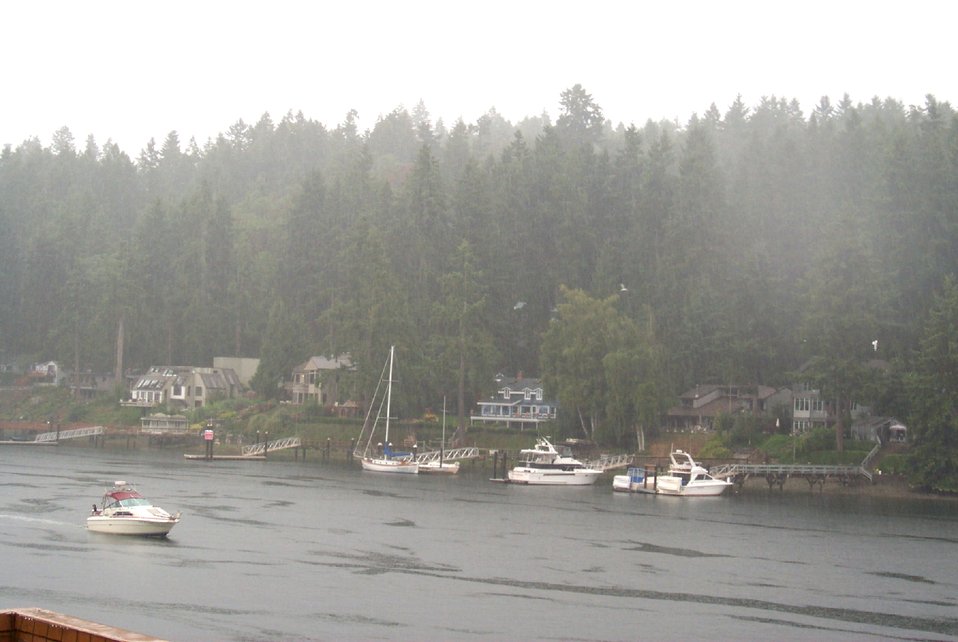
A rainy day at Gig Harbor. Sport fishing boats are undeterred by the rain.